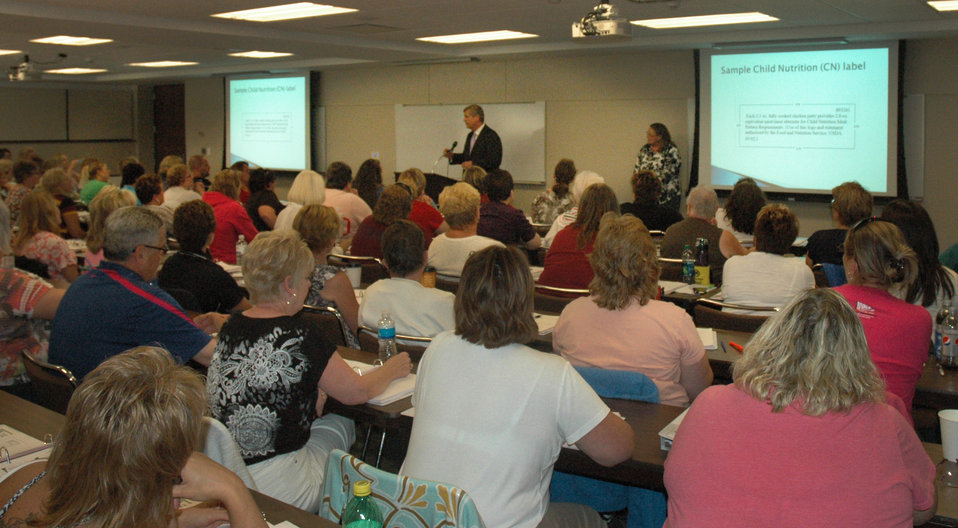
Agriculture Secretary Tom Vilsack made a surprise visit to the School Foods – Healthy Meals Workshop in Ames, Iowa, on Tuesday, July 24, 2012, where more than 100 school food mangers were meeting to discuss Iowa’s school lunch programs. The Secretary told conference attendees that President Obama’s first directive to him when becoming Ag Secretary was to make sure our nation’s children receive proper nutrition through school lunches.